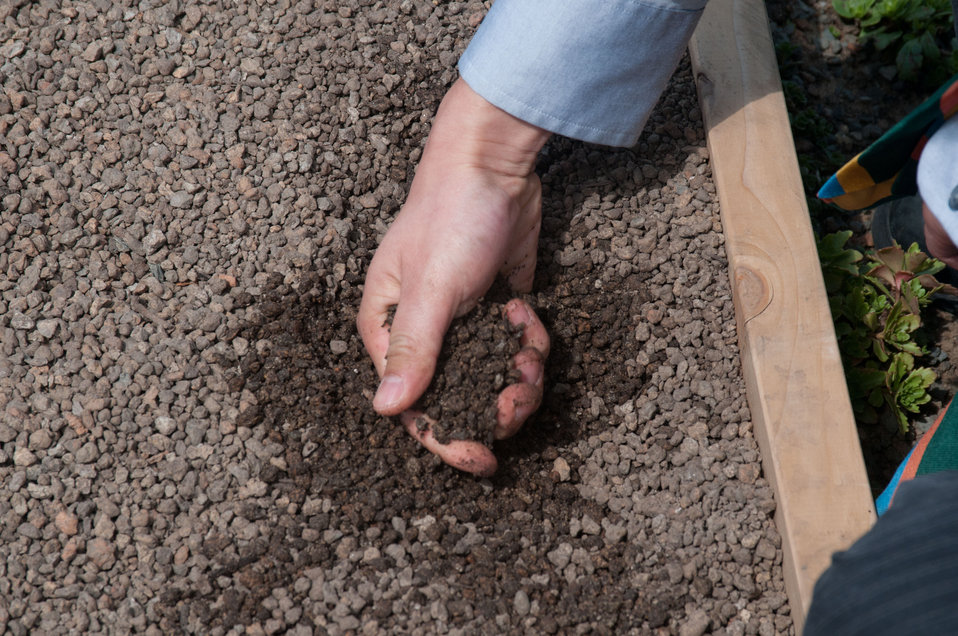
Rooftop vegetable garden is ready for planting at Bread for the City in Northwest Washington, DC on Friday April 29, 2011. The garden features specialized soil made of organic and inorganic material for rooftop gardens. The 30 wooden planters are about 4 inches tall but are not separate from the soil covering the roof, so there is a 10' depth to the plant in the boxes. Ground cover plants are already on site and await a team of volunteers to plant them in the walkways to retain moisture and help keep the soil temperature stable. This will be the largest of this kind in the Metro DC area. In addition to supplementing the fresh vegetable given to the community, it will also allow local residents to grown produce that is not normally marketed in this area.